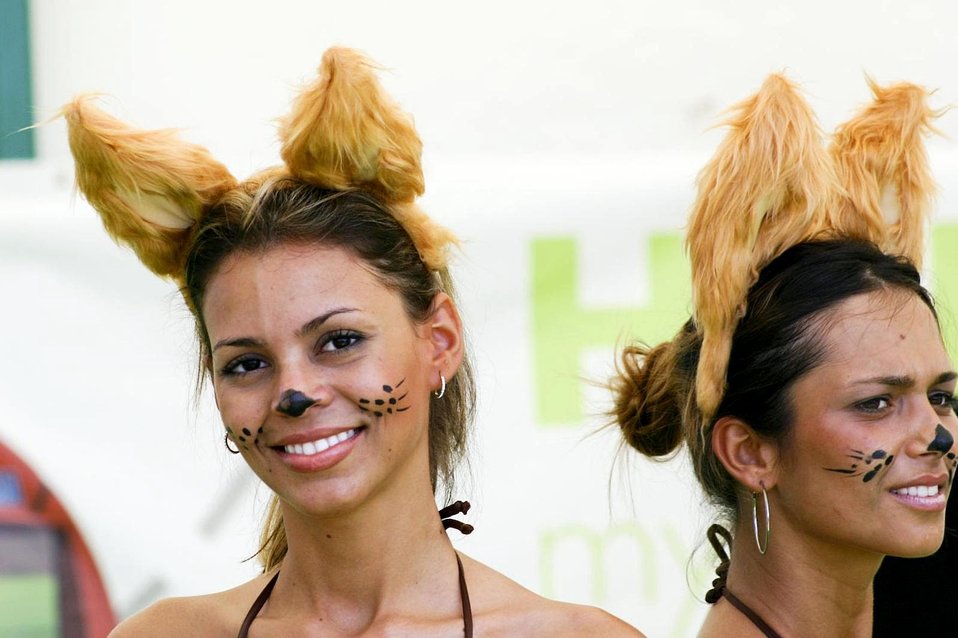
English:
Image title: Cat woman Image from Public domain images website, http://www.public-domain-image.com/full-image/people-public-domain-images-pictures/female-women-public-domain-images-pictures/cat-woman.jpg.html